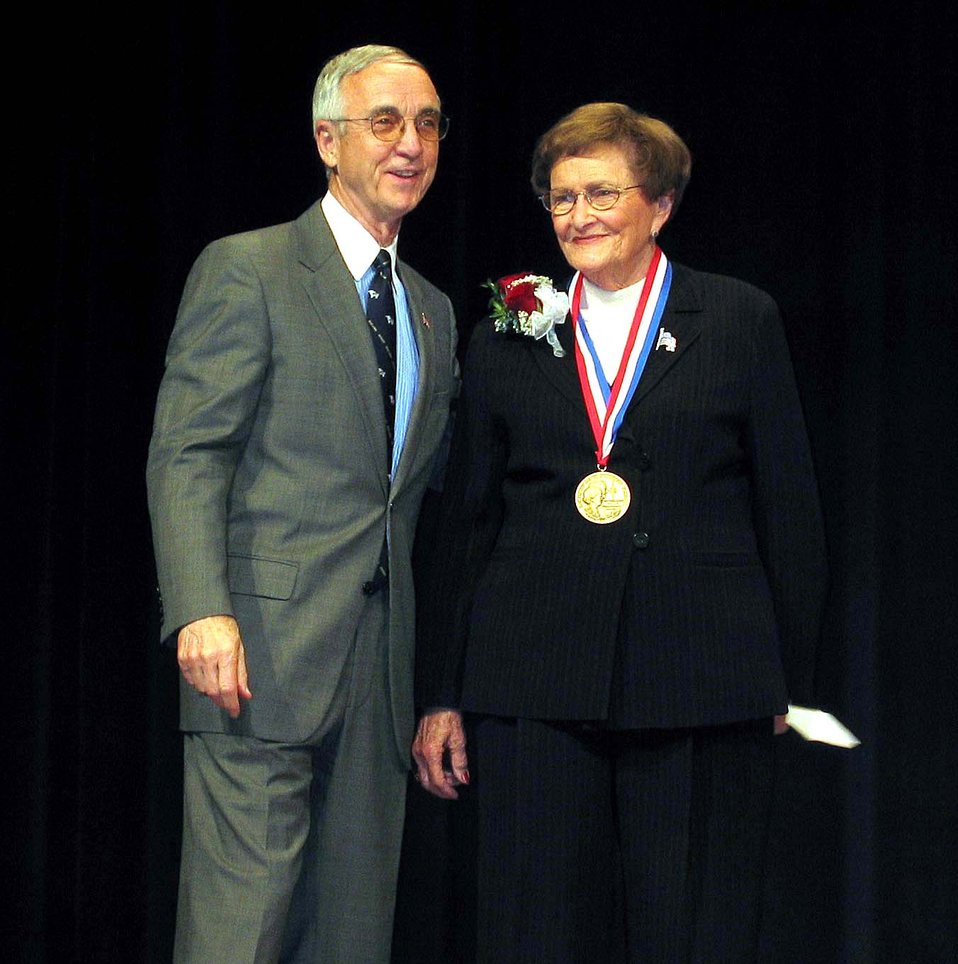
Armed forces honor longtime Air Force volunteer

WASHINGTON -- Dorothy Hunt Finley is this year's recipient of the Zachary and Elizabeth Fisher Distinguished Civilian Humanitarian Award. Navy Secretary Gordon England presented Mrs. Finley with the award at a Dec. 2 Pentagon ceremony. She is a leading member of the Davis-Monthan 50, an organization dedicated to supporting Airmen and their families at Davis-Monthan Air Force Base, Ariz.